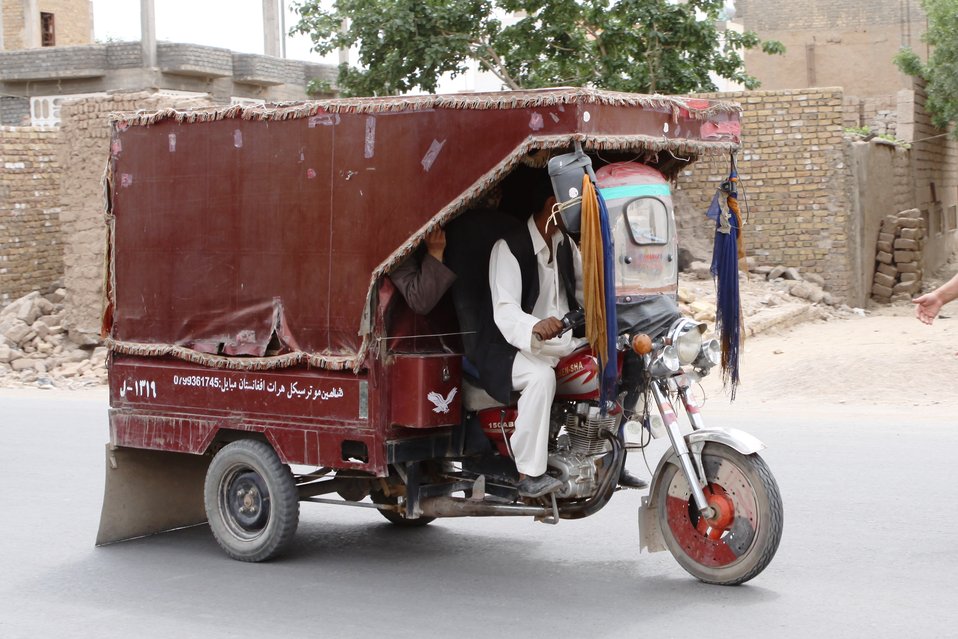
100525 Hirat Marble Conference 637